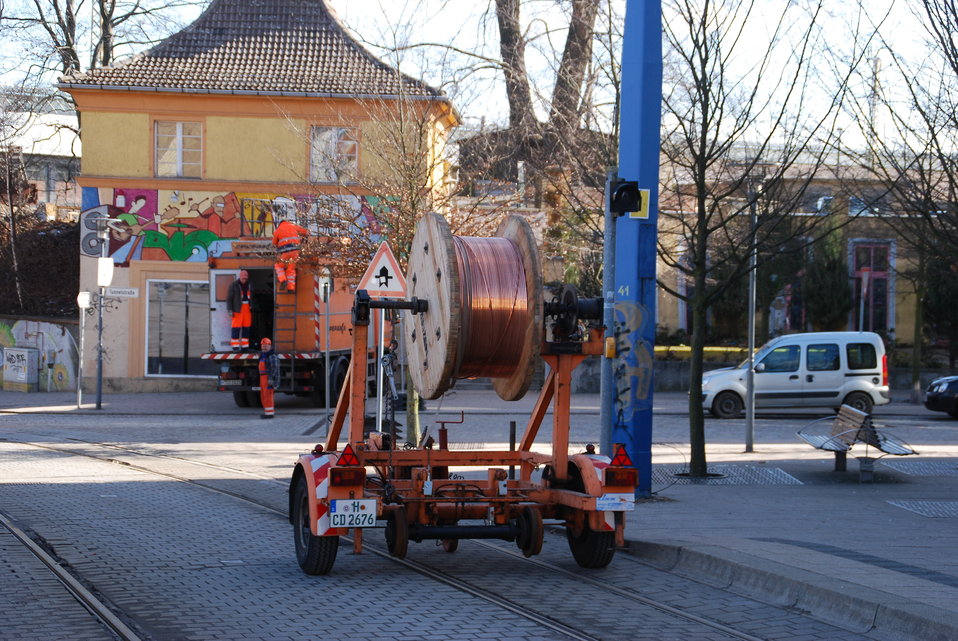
Abriss Bahnhofstunnel Frankfurt (Oder)